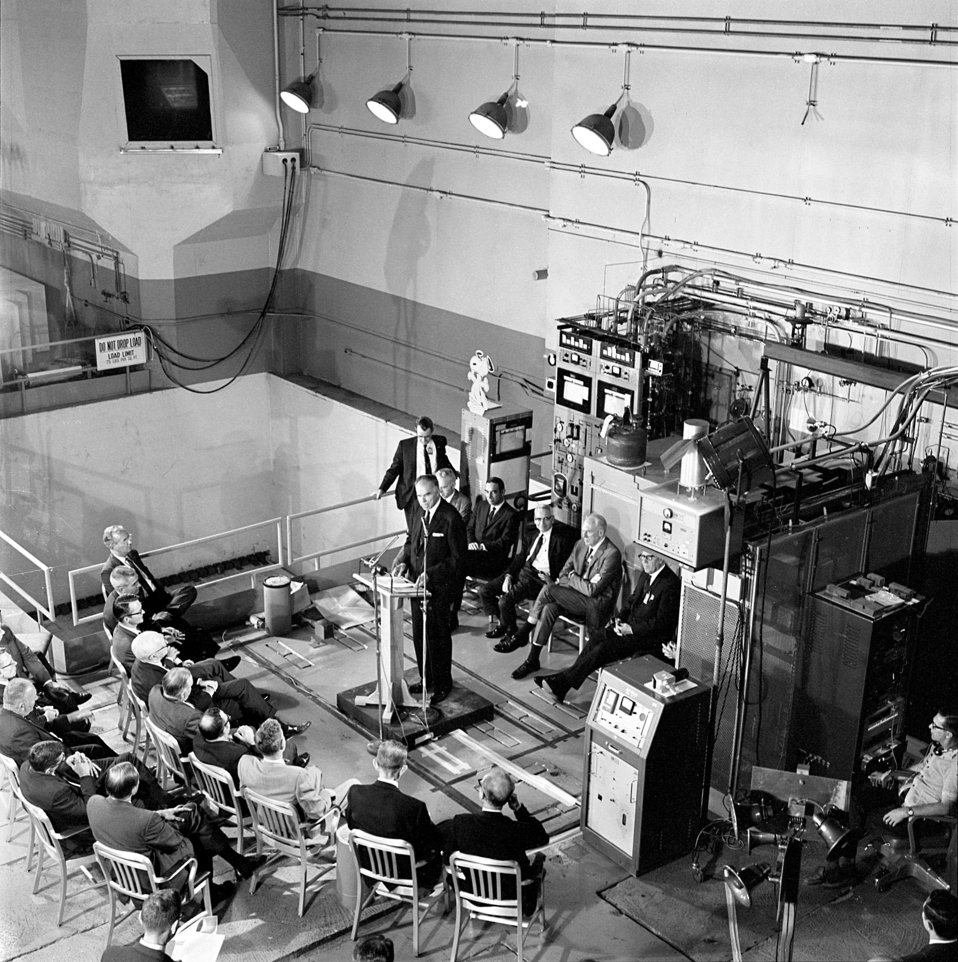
Startup of MSRE with U-233 with Atomic Energy Commission Chairman Glenn Seaborg speaking 1968 Oak Ridge

68-510 DOE photo Frank Hoffman 10-10-1968 Molten Salt Reactor began operating with uranium-233 fuel Oak Ridge Tennessee